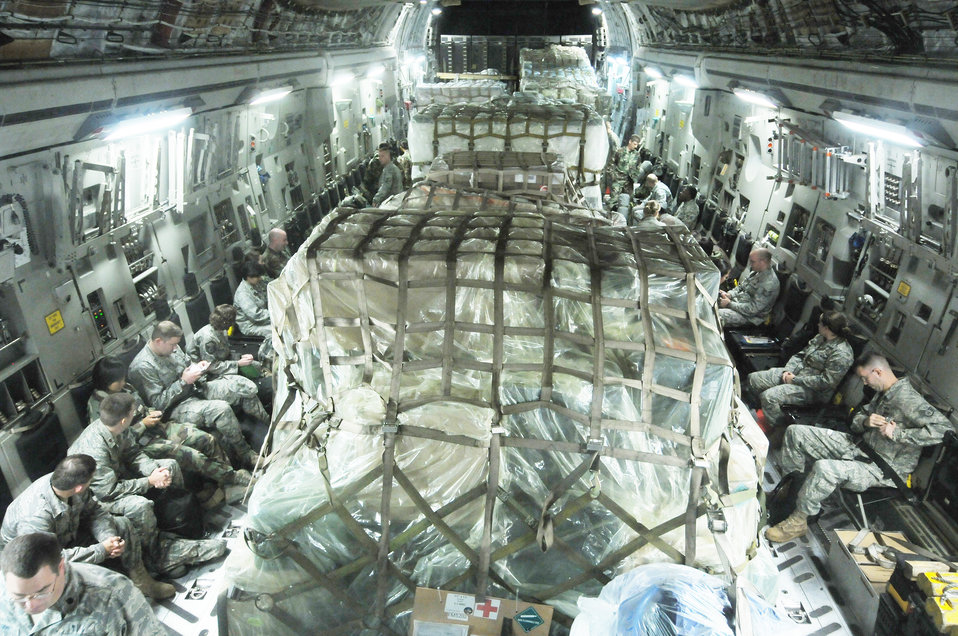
Rapid humanitarian response

An Air Force Humanitarian Assistance Rapid Response Team and a mobile field surgical team left Yokota Air Base Japan, Oct. 5, 2009 en route to Padang, Indonesia, to provide medical care to those affected by the recent 7.6-magnitude earthquake. A C-17 Globemaster III crew from Elmendorf Air Force Base, Alaska, transported the team and 13 pallets of equipment necessary to support the team.